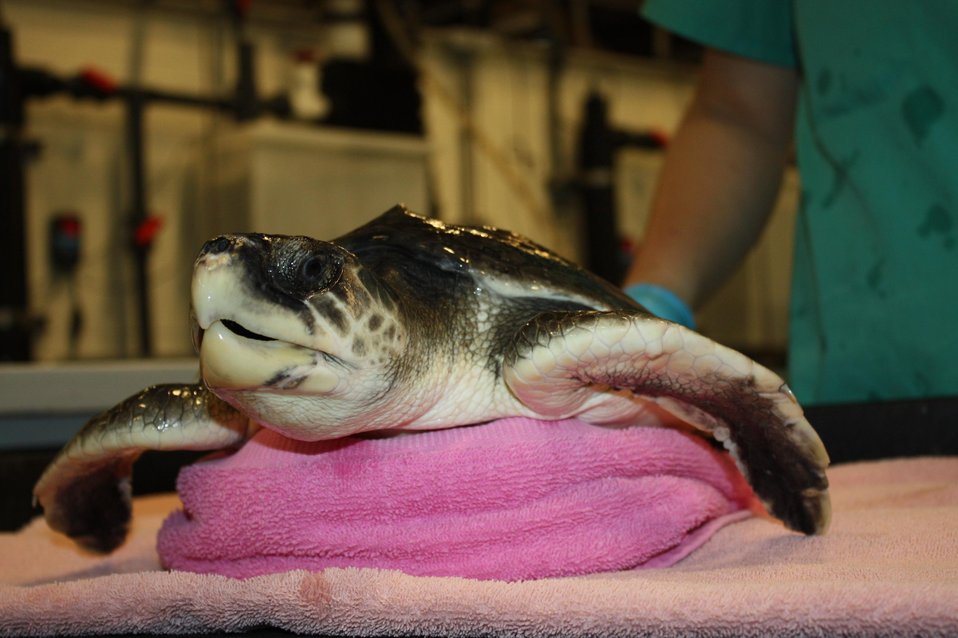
Kemp Ridley's at New England Aqurium

This cold-stunned sea turtle was rescued off the shores of Cape Cod and is doing well under the watch of biologists at the New England Aqurium. The turtle's name is Professor X.